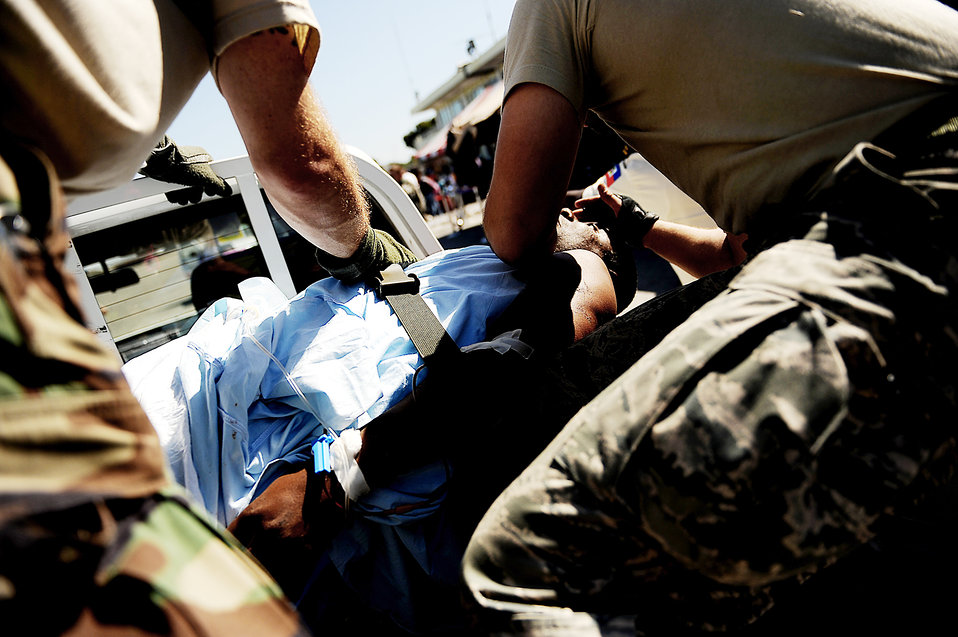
Hurlburt Field medics continue to save lives in Haiti

Master Sgt. Douglas Brook and Tech. Sgt. Nicholas Wentworth perform urgent medical care on a Haitian man at the Toussaint L'Ouverture International Airport Jan. 18, 2010, in Port-au-Prince, Haiti. The man was injured in the Jan. 12 7.0-magnitude earthquake. Sergeants Brook and Wentworth are both assigned to the 1st Special Operations Support Squadron.